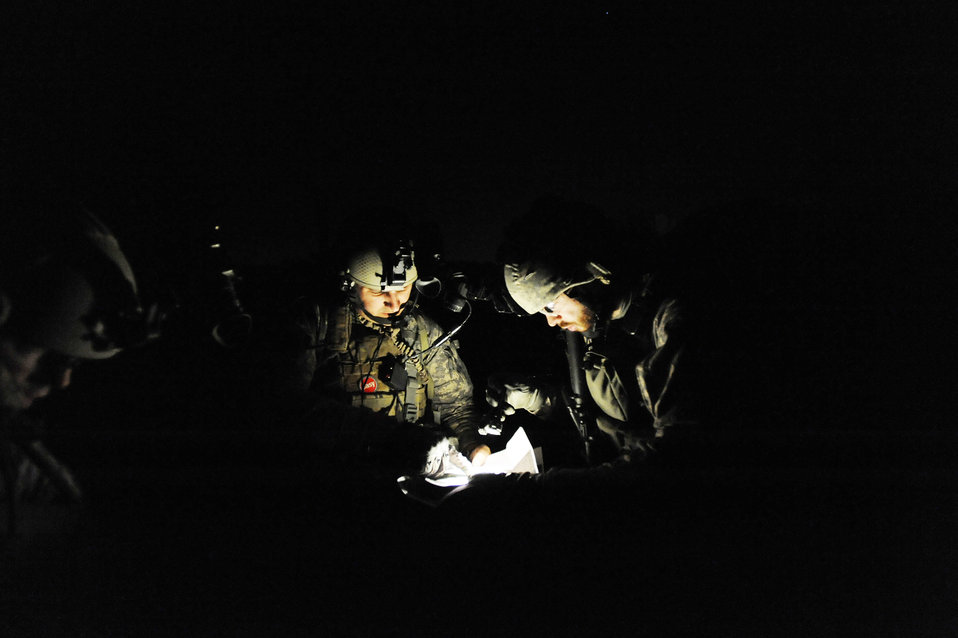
OSI protects Airmen in Afghanistan

An Army Soldier from Task Force Morgan (left) and Mathew Johnson confirm the location of grid coordinates they will investigate during a search and capture mission March 30, 2010, in Parwan Province, Afghanistan. Mr. Johnson is a tactical security element team member assigned to the Air Force Office of Special Investigations Expeditionary Det. 2405,